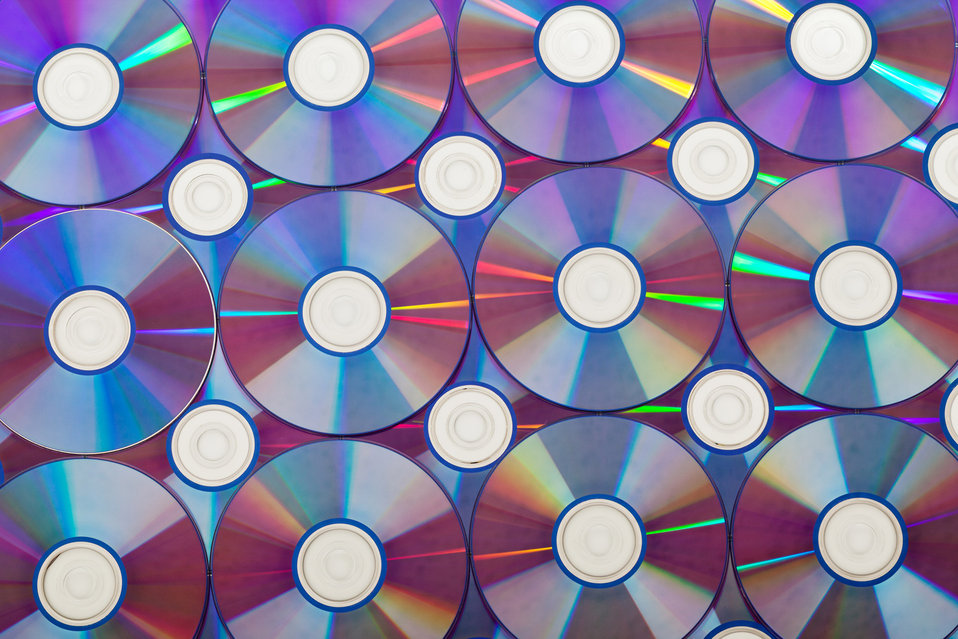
Optical media background

Colorful circular background made from optical media.